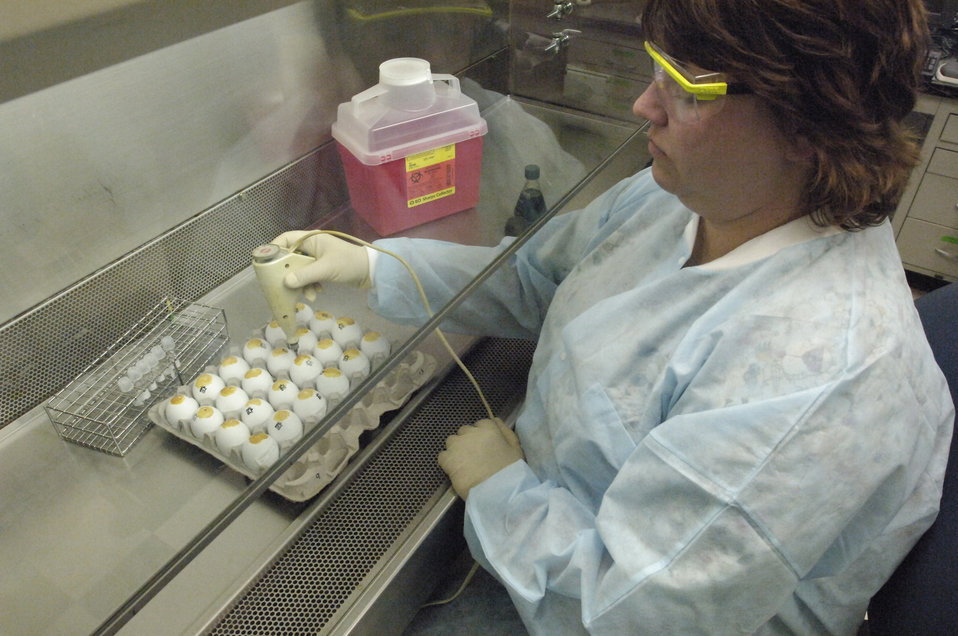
U.S. Department of Agriculture (USDA) Animal and Plant Health Inspection Service (APHIS) APHIS’s National Veterinary Services Laboratory in Ames, Iowa is a World Organization for Animal Health (OIE) reference laboratory for numerous diseases, including avian influenza. These photos show APHIS laboratory technicians performing diagnostic testing and preparing to enter an animal room. They are following prescribed biosafety procedures by wearing the appropriate personal protective equipment.